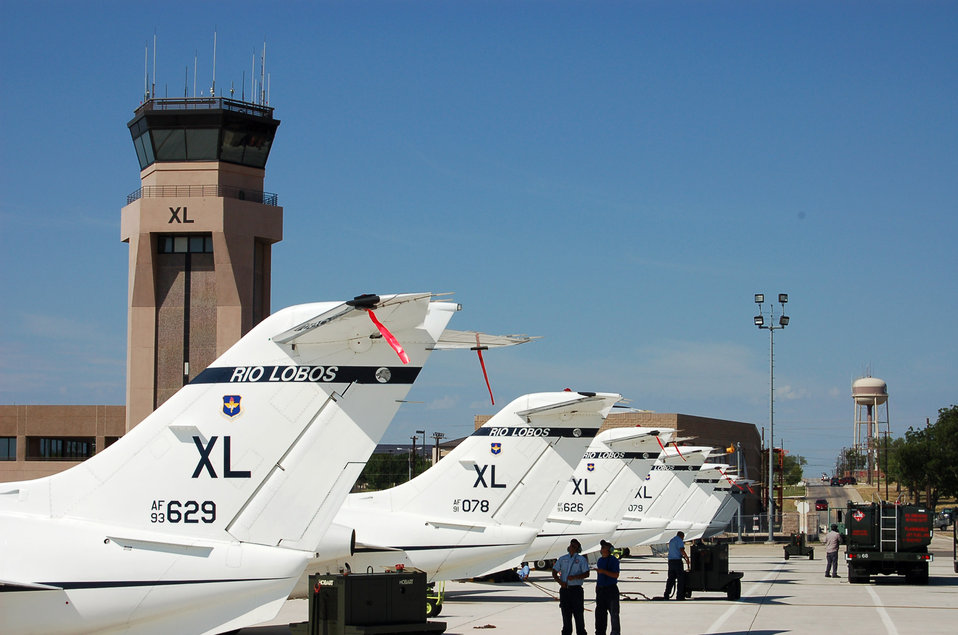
Laughlin students keep air traffic controllers busy

T-1 Jayhawks are parked on the ramp in front of the air traffic control tower at Laughlin Air Force Base, Texas, on June 26, 2006. Laughlin's 47th Flying Training Wing trains Air Force pilots, who fly about 89,000 flying hours a year.